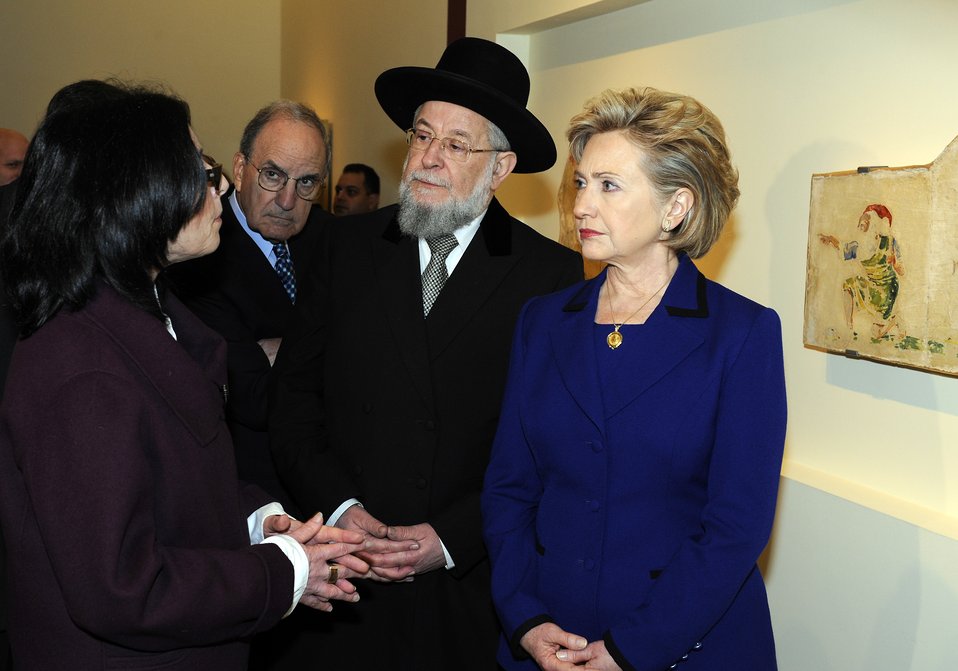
Secretary Clinton Visits Holocaust Art Museum

U.S. Secretary of State Hillary Clinton visited the new Bruno Schulz display, Wall Painting under Coercion, in the Holocaust Art Museum, guided by Director of the Museums Division Yehudit Inbar and Senior Art Curator Yehudit Shendar and accompanied by Chief Rabbi Lau, Yad Vashem Council Chairman, and Middle East Special Envoy Senator George Mitchell in Jerusalem March 3, 2009